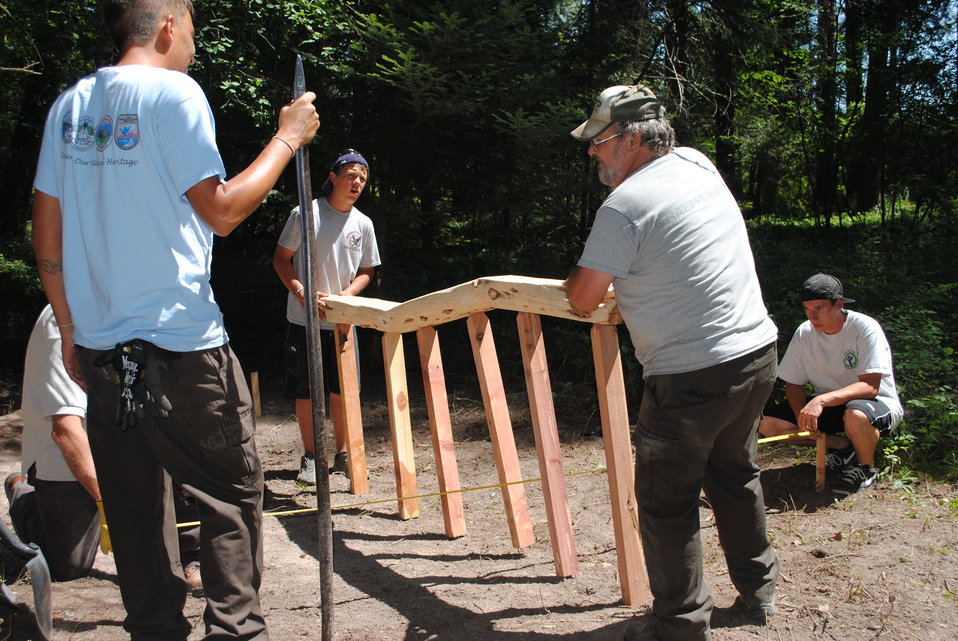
Creston National Fish Hatchery Outdoor Classroom Project

Montana Tribal Youth Conservation Corps
Nature Explore Outdoor Classroom Project

Dave Bermal and Kyle Couture carry the crooked balance beam for the 'Climbing and Crawling' area.

Evie Bradley/USFWS